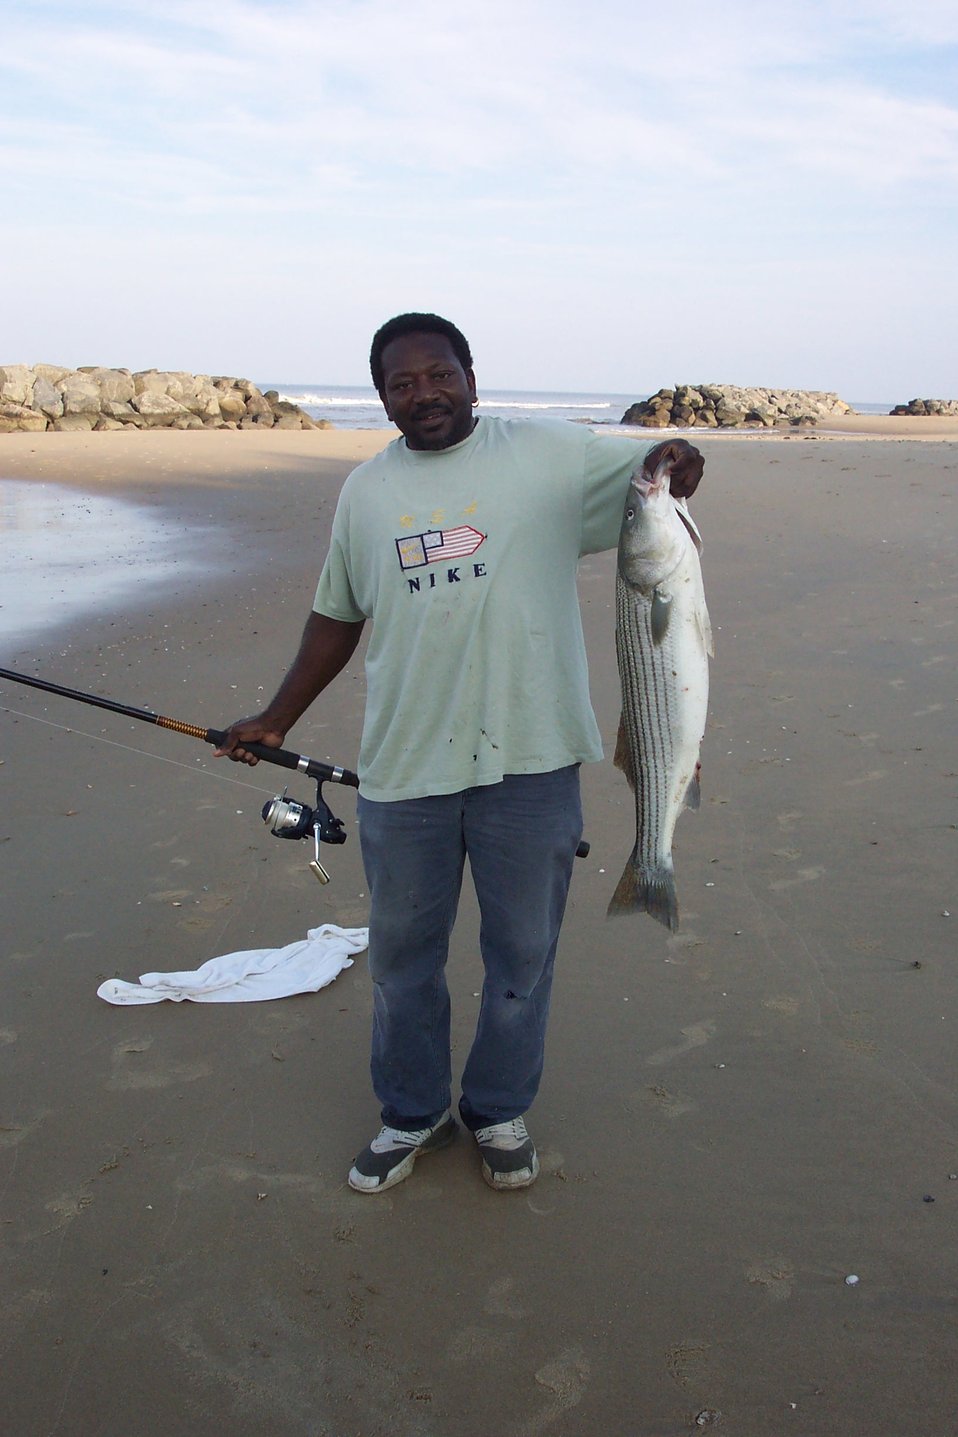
A lucky fisherman with a striped bass at Cape Henry.